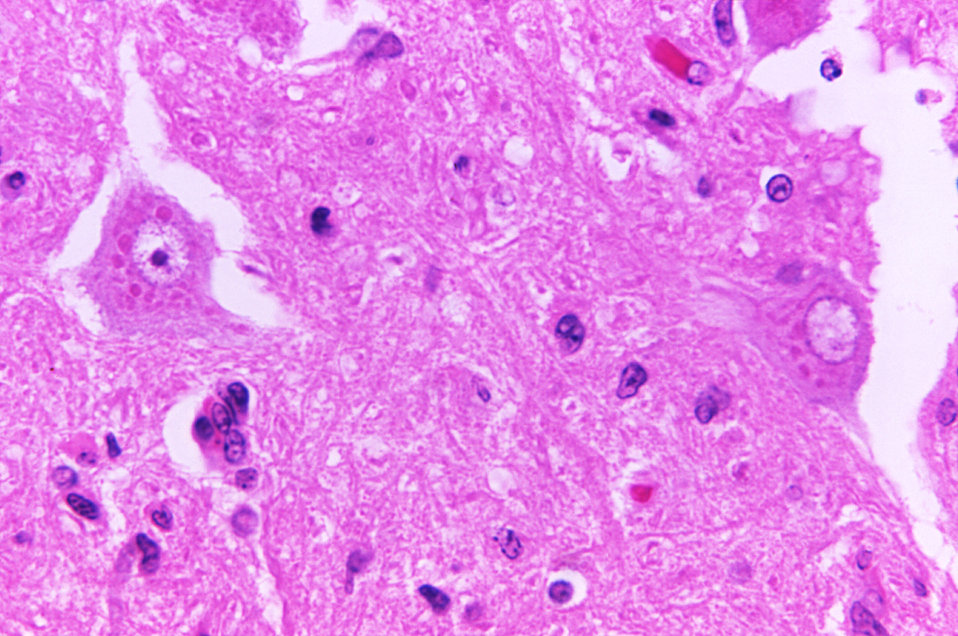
This micrograph depicts the histopathologic changes associated with rabies encephalitis prepared using an H&E stain.